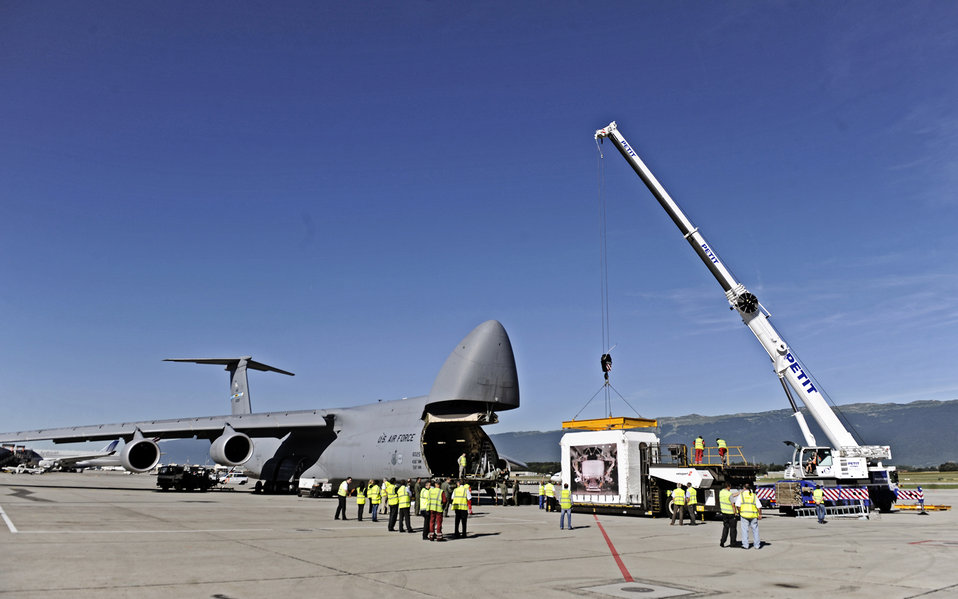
C-5M and AMS

A C-5M Super Galaxy is loaded with the Alpha Magnetic Spectrometer Aug. 25, 2010, at the Geneva airport. The AMS is the brain child of Nobel laureate Dr. Samuel Ting and has been in production for 16 years. The purpose of the device is to detect and analyze particles found in space while docked to the International Space Station. The C-5M is based out of Dover Air Force Base, Del.